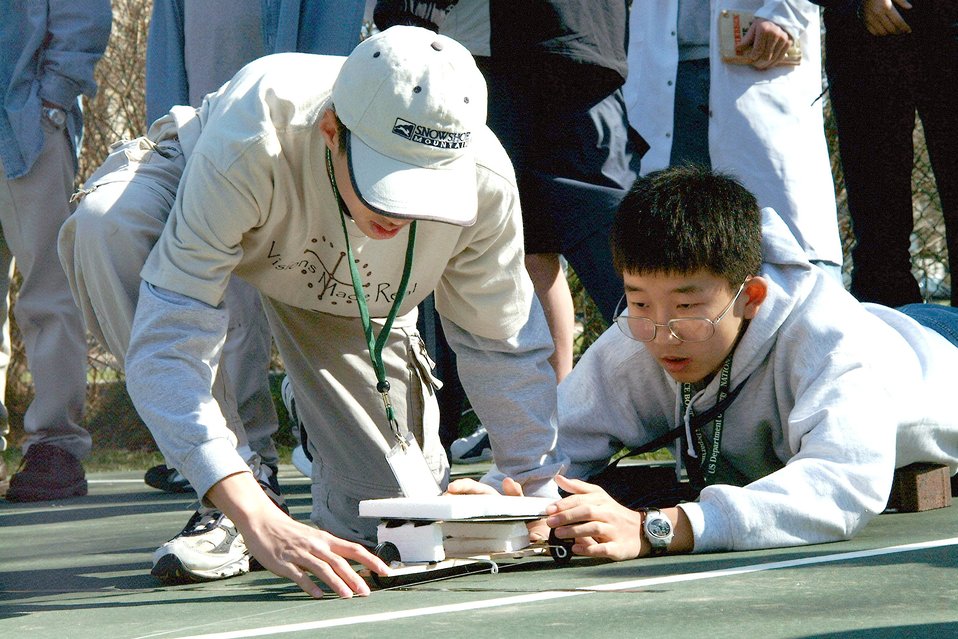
MEMBERS OF THE WINNING TEAM, SAMFORD MIDDLE SCHOOL, AUBURN, AL, PREPARE THEIR MODEL SOLAR CAR FOR RACE.

THE DEPARTMENT OF ENERGY SPONSORED THE FIRST NATIONAL MIDDLE SCHOOL SCIENCE BOWL ON MARCH 21-24, 2002 IN WASHINGTON, DC AT DOE HEADQUARTERS FORRESTAL BUILDING. ON MARCH 23RD THE COMPETITION INCLUDED A MODEL SOLAR CAR RACE HELD AT THE NATIONAL 4-H CONFERENCE CENTER, CHEVY CHASE, MD. THE MODEL CARS WERE DESIGNED AND CONSTRUCTED BY THE TEAM MEMBERS.